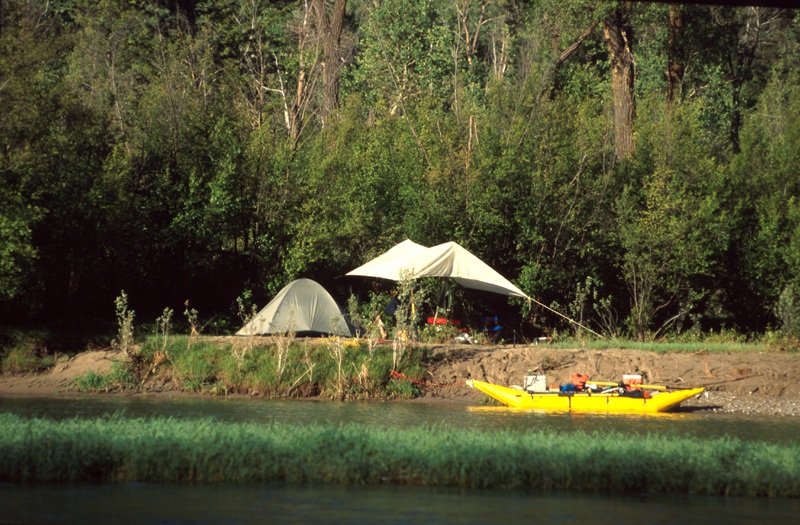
South Fork of the Snake River